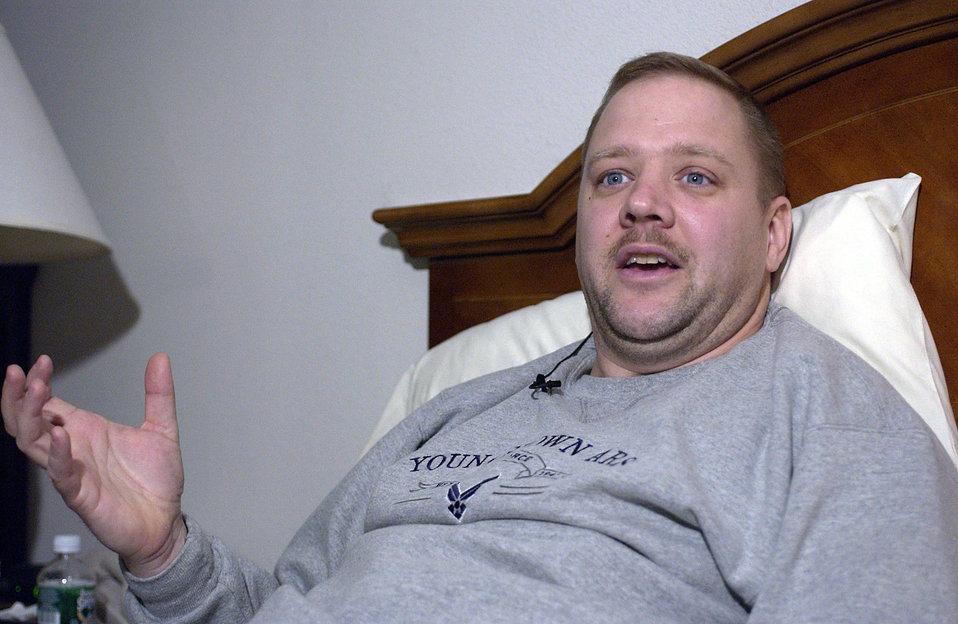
Captain's marrow saves life

WASHINGTON -- Capt. Brent Davis recovers from a bone marrow donation at Georgetown University Hospital on Dec. 9. The marrow Captain Davis donated will aid a 17-year-old boy in his recovery from non-Hodgkin's lymphoma, a type of cancer. Captain Davis is the chief of the 910th Airlift Wing public affairs office at Youngstown Air Reserve Station, Ohio.